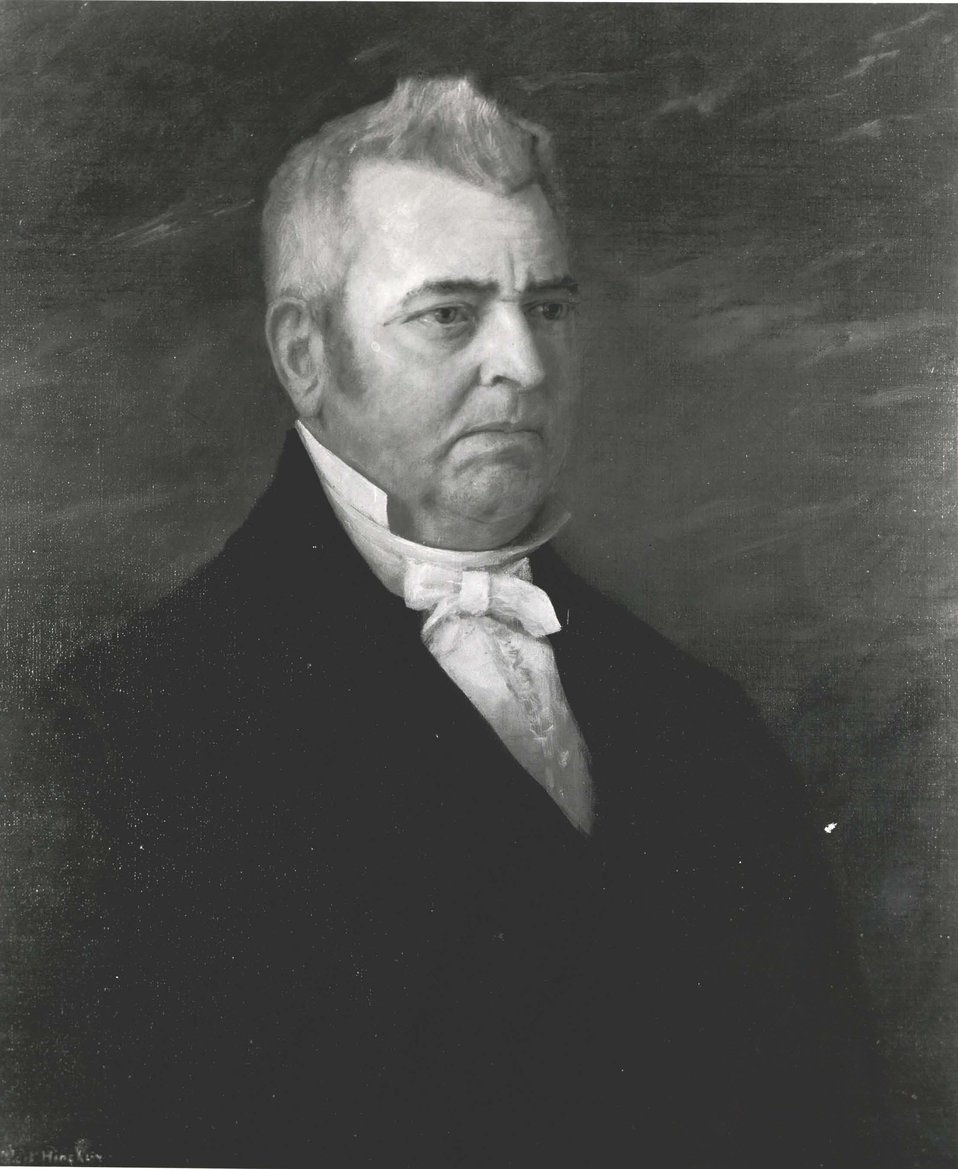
John M. Clayton, U.S. Secretary of State, March 8, 1849 to July 22, 1850